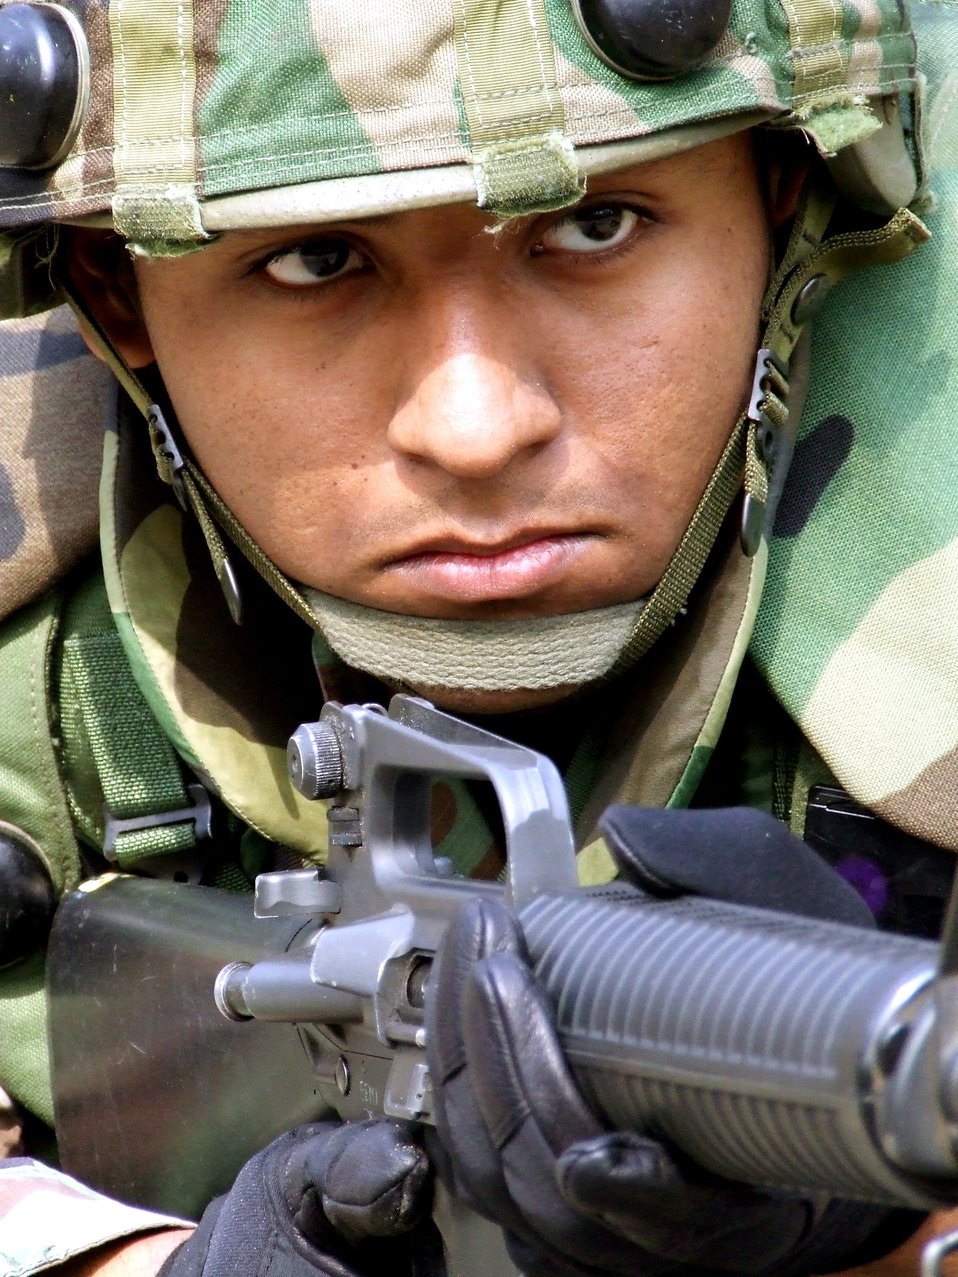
Fort Dix grinds combat mindset into Airmen

Airman 1st Class Jon Luna of Pope Air Force Base, N.C., practices squad and fire team maneuvers with other students while at the Advanced Contingency Skills Training Course at Fort Dix, N.J. The course prepares Airmen for upcoming deployments through teaching areas such as deployment tactics, patrolling, convoy operations and self defense. The course is taught by the U.S. Air Force Expeditionary Center's 421st Combat Training Squadron.